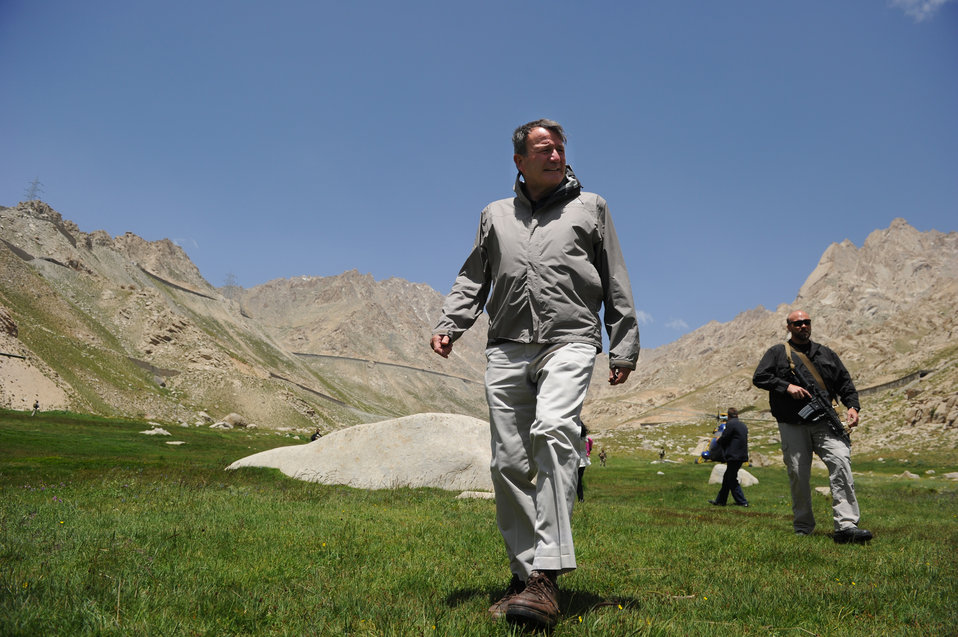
U.S. Ambassador Karl W. Eikenberry arrives near the South end of the Salang Tunnel to mark the beginning of renovations of the tunnel at the border of Parwan and Baghlan Provinces, Afghanistan, on Wednesday, June 15, 2011. (S.K.Vemmer/Department of State)